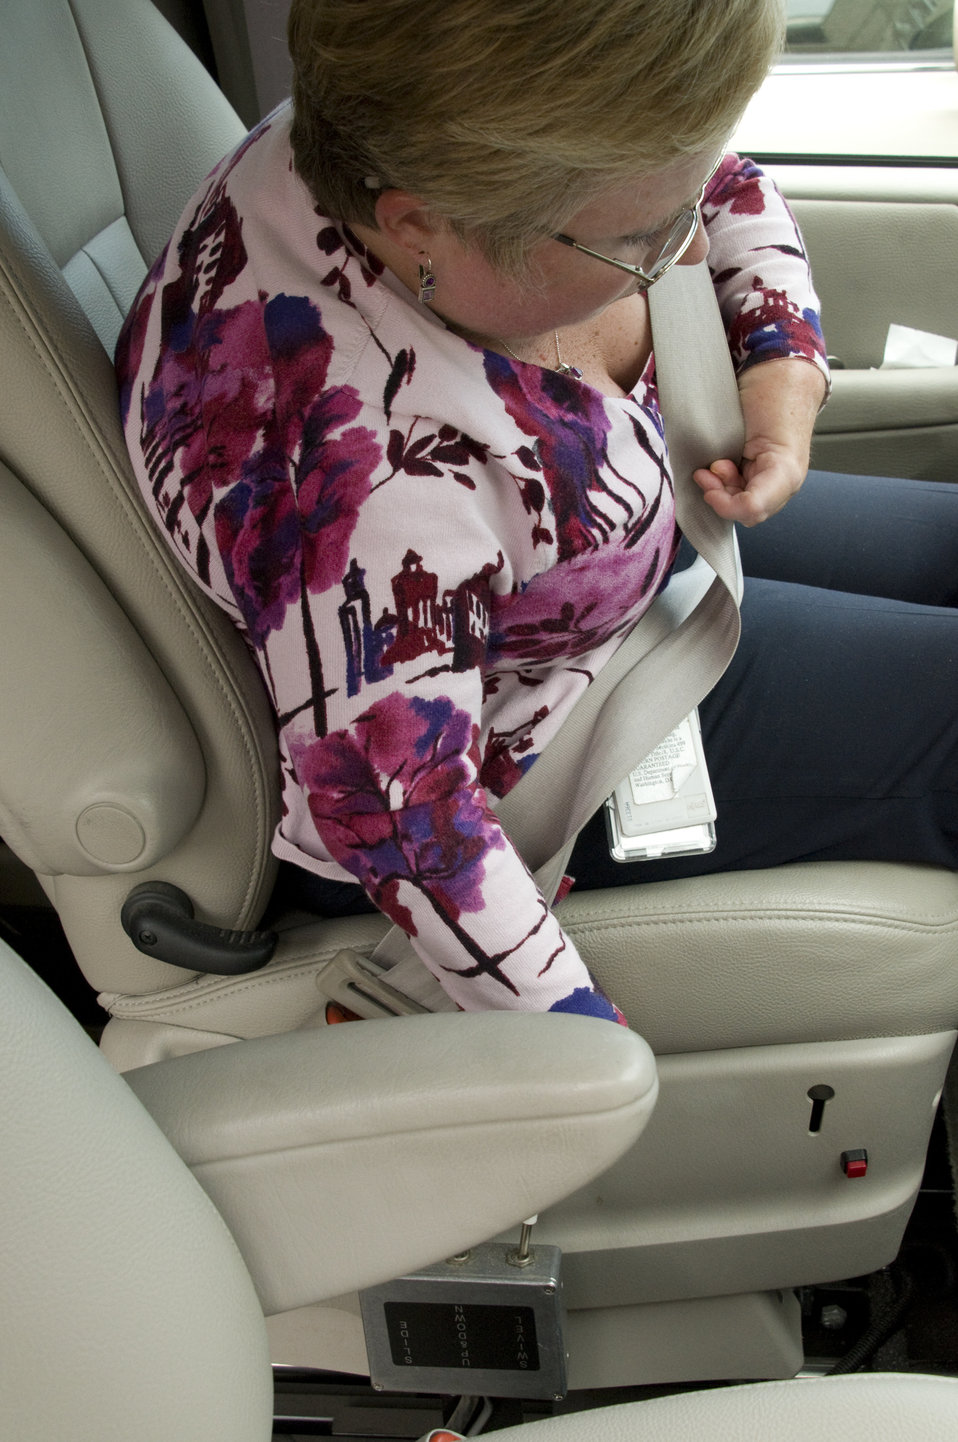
The woman pictured here, had just boarded her vehicle by way of an access ramp, while seated in her wheelchair, and had maneuvered herself into the driver's-side swivel seat. At this point before embarking on her drive, she was fastening her safety belt, and adjusting it for a more comfortable trip. Note the additional steering wheel handle, which due to her disability, would enable her to operate the accelerator and braking system using this hand control.